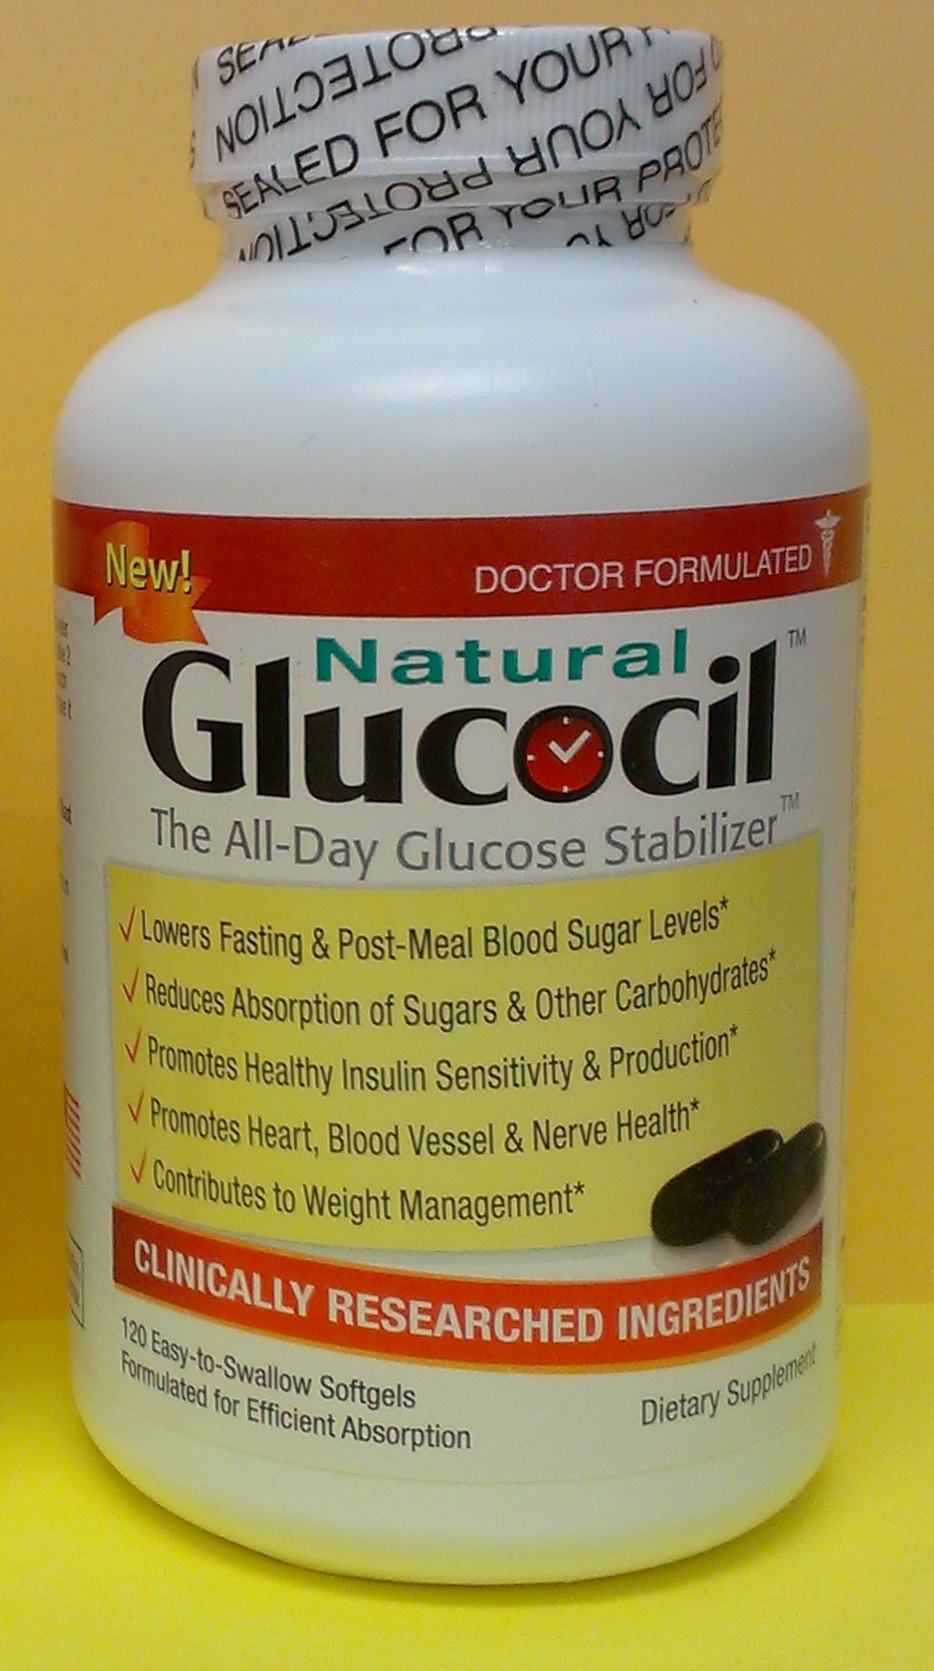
Illegally Sold Diabetes Treatments - Glucocil

This product is promoted with unapproved claims to prevent or treat diabetes and/or its complications. FDA warns consumers to avoid unproven and potentially unsafe products sold as treatments for diabetes.